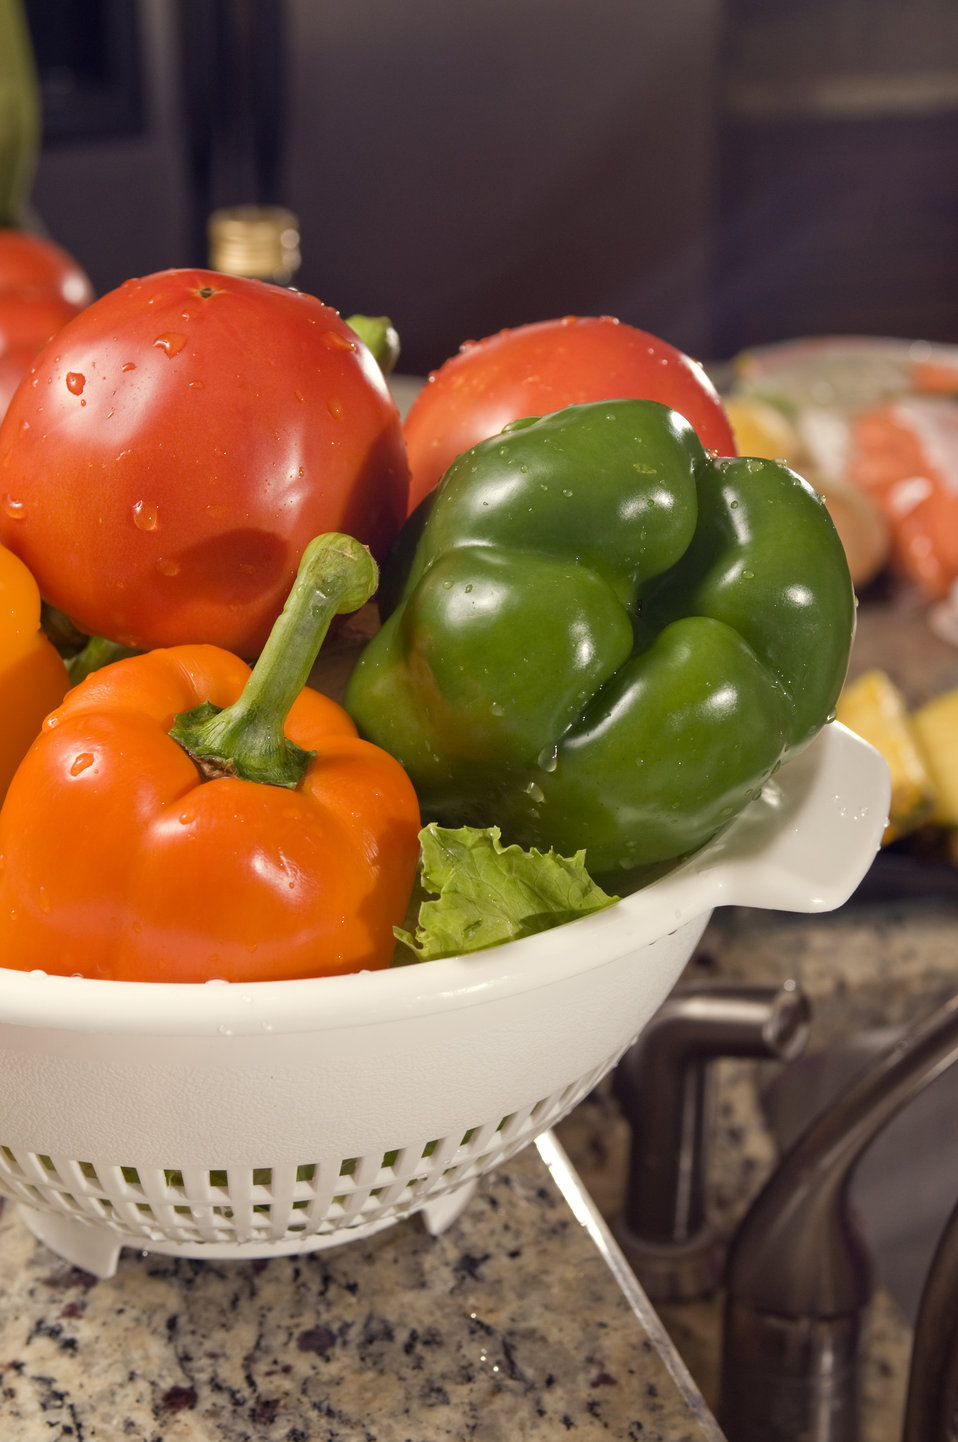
Pictured here in this kitchen setting was a colander setting atop a kitchen sink's countertop, which contained a number of newly-purchased, just washed produce products including two orange bell peppers, a green bell pepper, two tomatoes, and some lettuce. Other groceries could be seen in the background, all of which would be prepared in a clean sink preparation area of this kitchen.